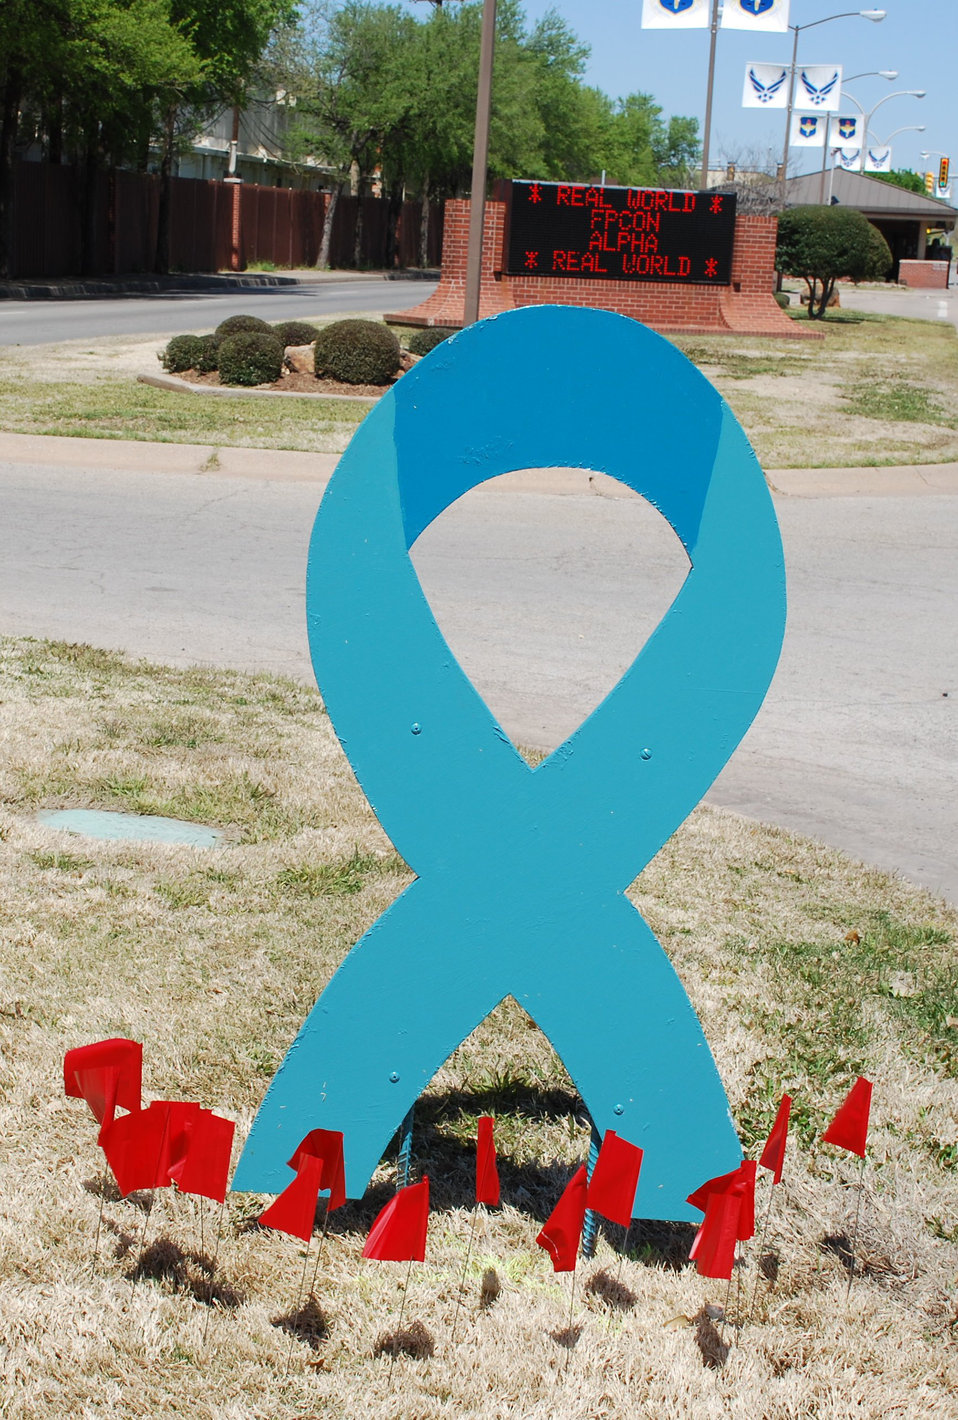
SARC creates first SASH program in AF

A teal ribbon is displayed at the main gate to Sheppard Air Force Base, Texas, March 31, 2010. Members of Students Against Sexual Assault and Harassment, or SASH, painted eight ribbons for Sexual Assault Awareness Month. The ribbons were placed at each of the Sheppard AFB gates.